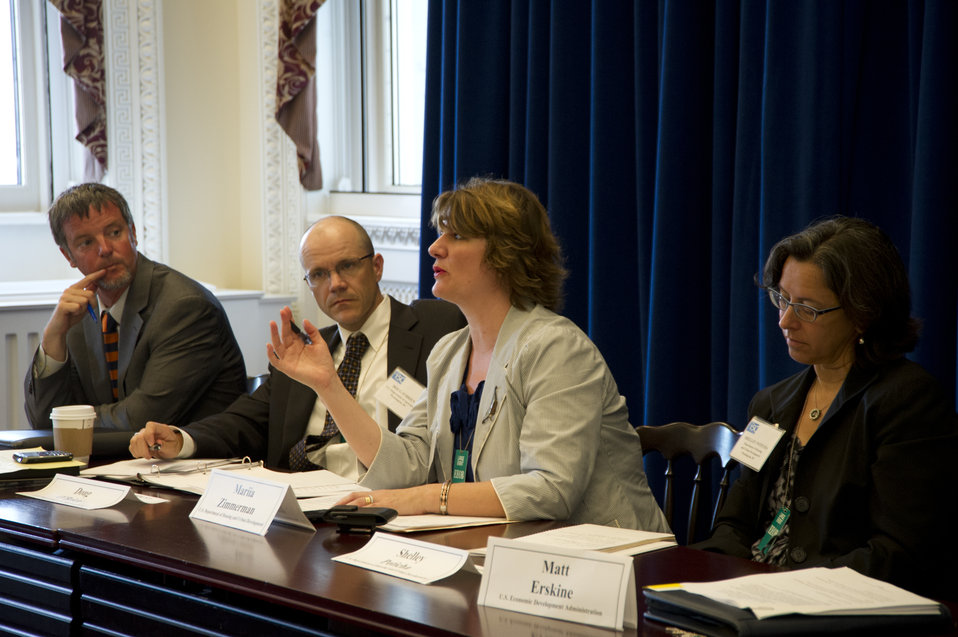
Left to right, Doug McKalip, Senior Policy Advisor for Rural Affairs, U.S. Department of Agriculture (USDA), Doug O'Brien, Deputy Under Secretary for Rural Development, USDA, Maria Zimmerman, Deputy Director of the Office of Sustainable Housing and Communities, U.S. Department of Housing and Urban Development (HUD) and Shelly Poticha, Director of Office of Sustainable Housing and Communities, HUD at the White House Forum on Regional Innovation in Rural America at the Eisenhower Executive Office Building, in Washington D.C., on Wednesday, June 13, 2012.